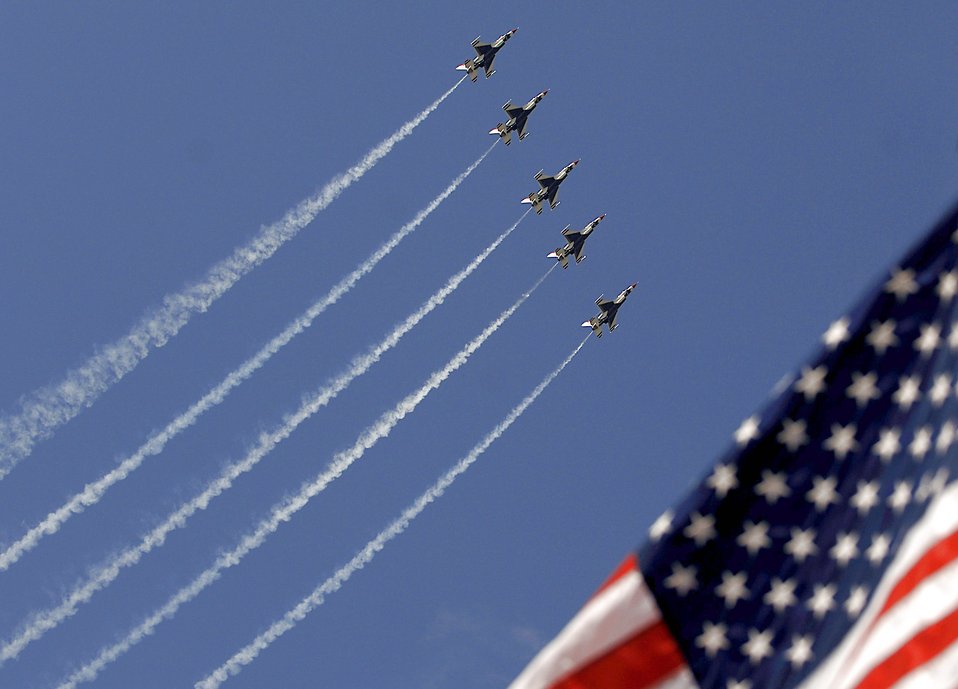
Thunderbirds announce 2009 officer selections

The Air Force Thunderbirds perform a pass across airshow central during the 2008